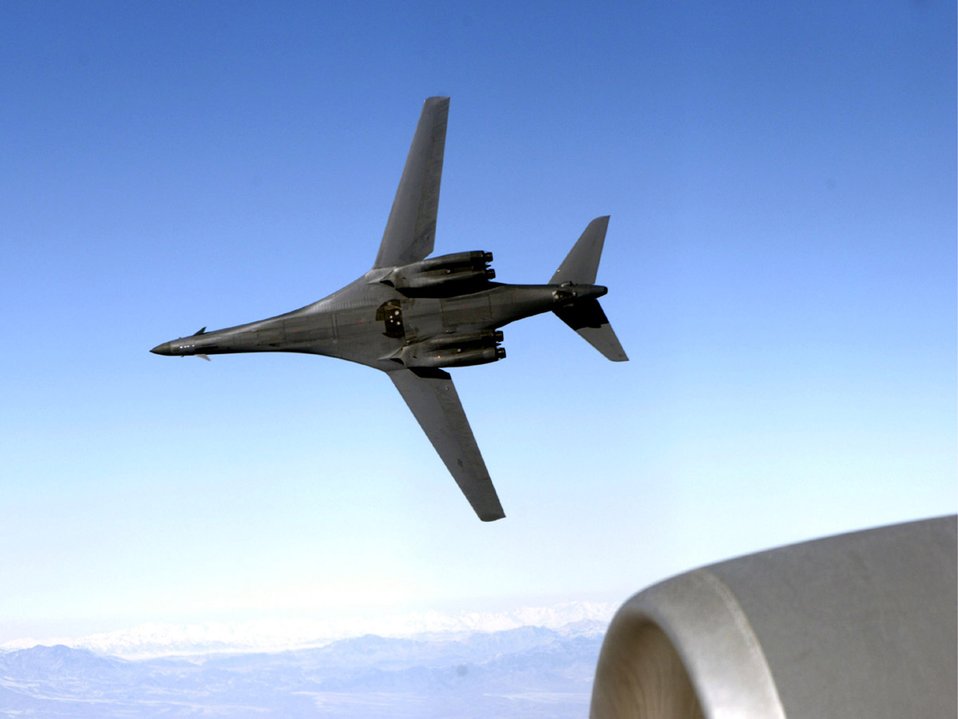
Air strikes hit more than 40 targets in Iraq

A B-1B Lancer from the 9th Expeditionary Bomb Squadron pulls away from a KC-135 Stratotanker from the 22nd Expeditionary Air Refueling Squadron at Manas Air Base, Kyrgyzstan, after receiving fuel over Afghanistan. Two B-1Bs hit reported al-Qaida safe havens Jan. 10 in Arab Jabour, Iraq.